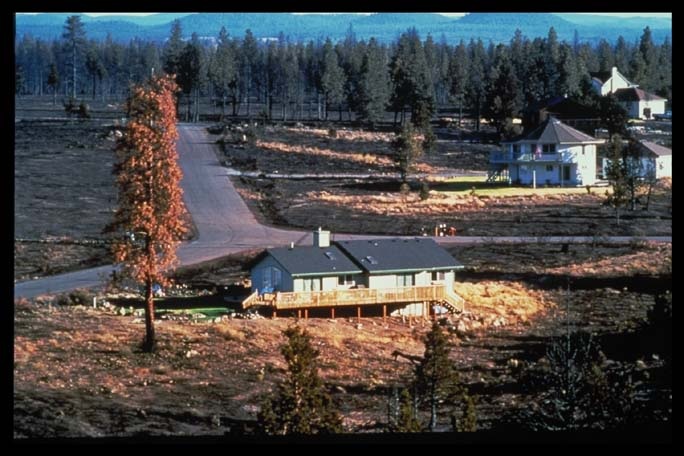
Wildland/Urban interface